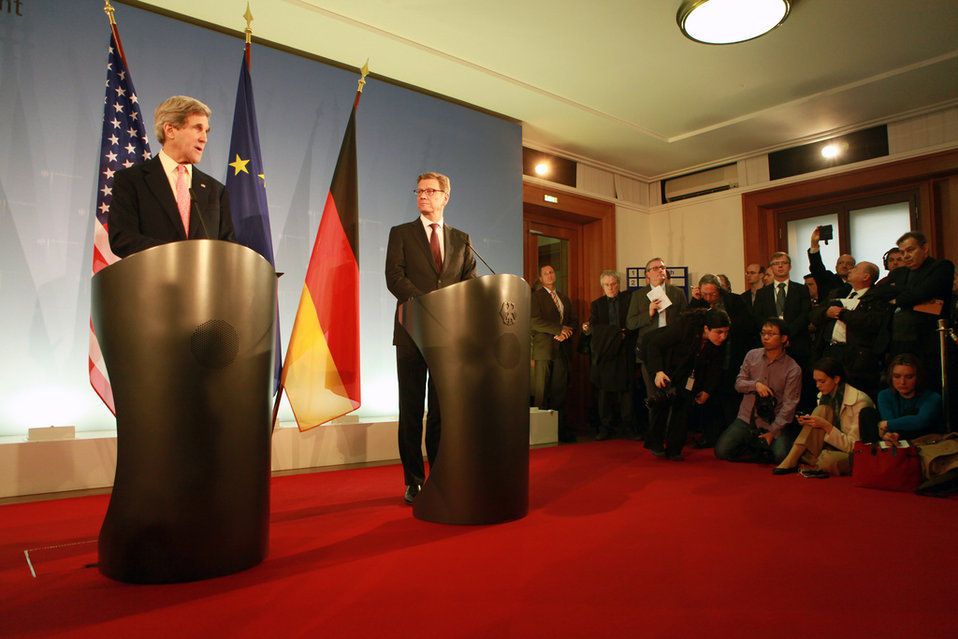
Secretary Kerry and German Foreign Minister Westerwelle Address Reporters

U.S. Secretary of State John Kerry holds a joint press conference with German Foreign Minister Guido Westerwelle in Berlin, Germany, February 26, 2013.